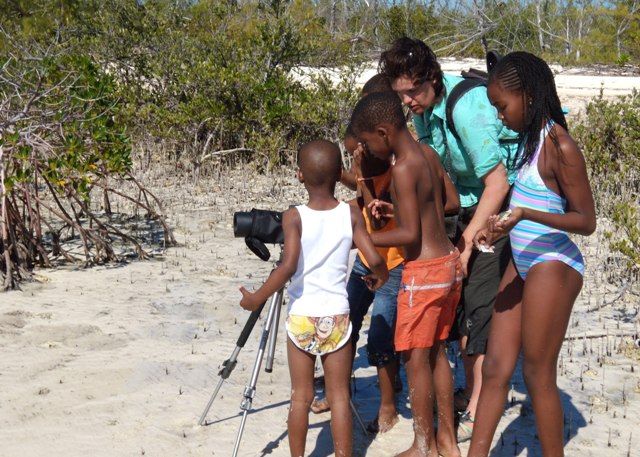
The Neugyen family looking at a piping plover flock

Working on New Providence Island.